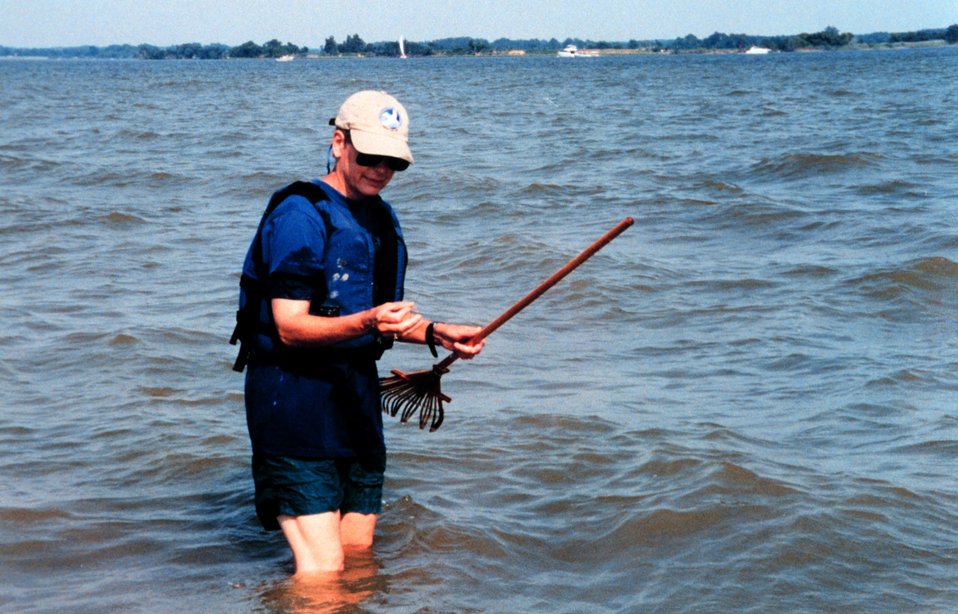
Searching for submerged aquatic vegetation (SAV's) in the Tred Avon River. Part of an annual Bay-wide ground-truthing effort.